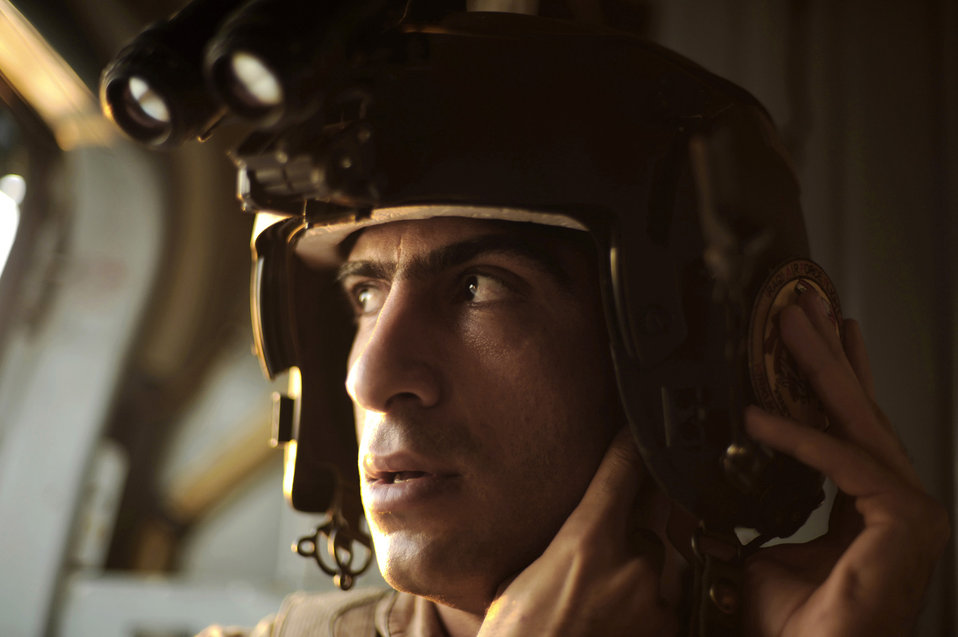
Airmen assist Iraqis with gunner training

Iraqi airman Motaz Mande adjusts his helmet prior to a night mission onboard an Iraqi Mi-171 helicopter July 19 at Camp Taji, Iraq, . The American aircrew on this flight belong to the 721st Air Expeditionary Advisory Squadron that assists the Iraqi air force with many functions, including helicopter pilot training and aerial gunner training. Airman Mande is an Iraqi air force aerial gunner.